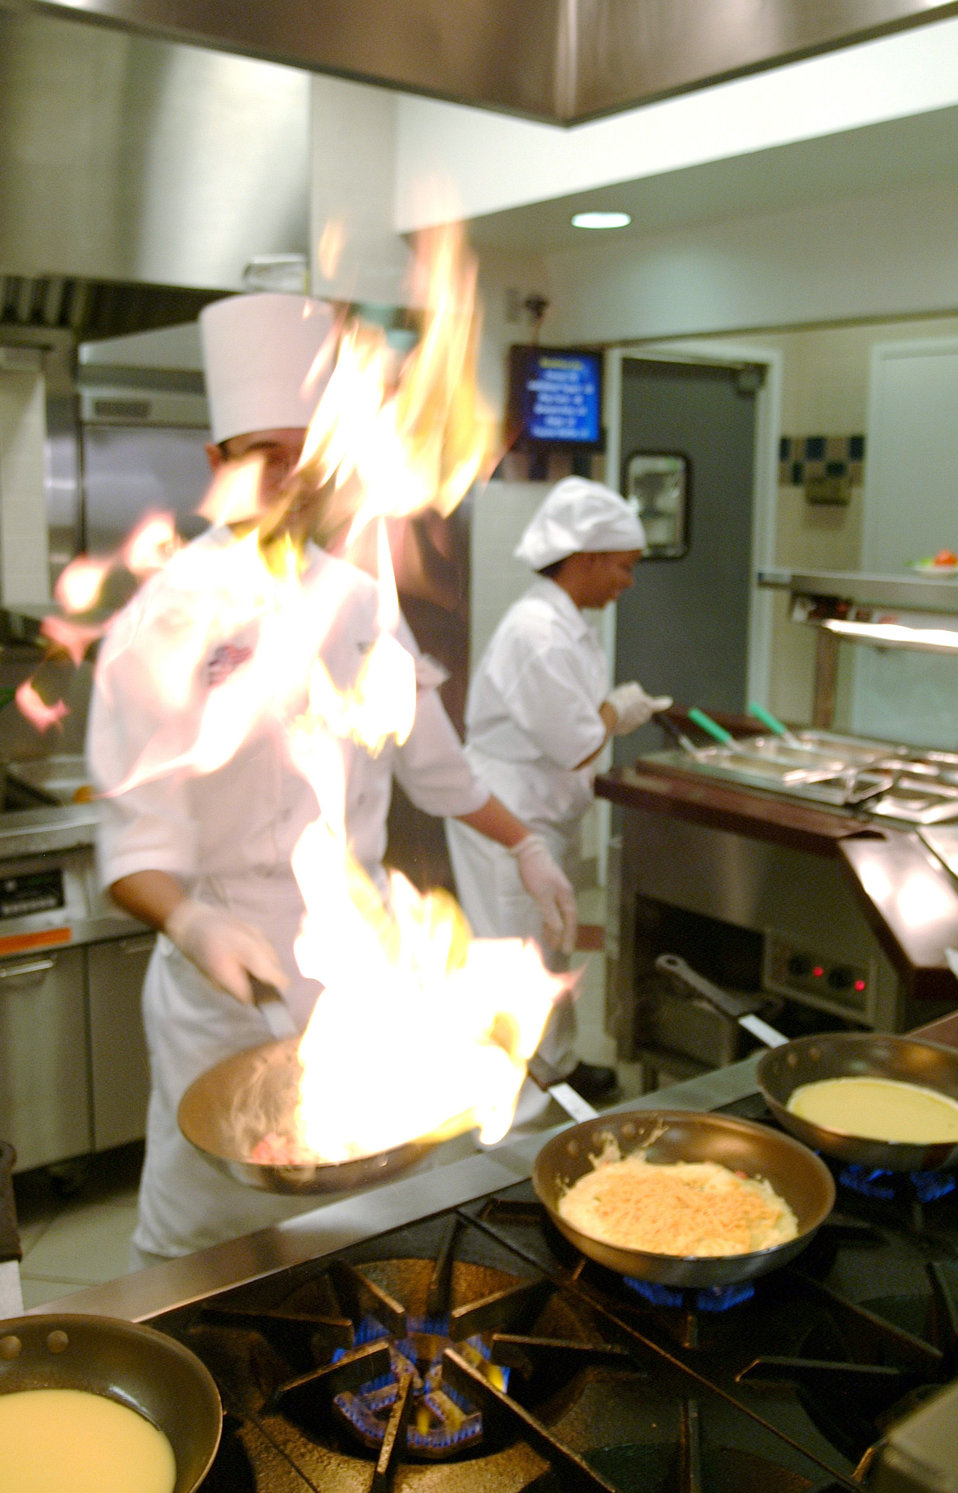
Base chef performs culinary magic

BUCKLEY AIR FORCE BASE, Colo. -- Francis Aragon flambés food for one of his customers. He is a food service worker at the dining facility here.